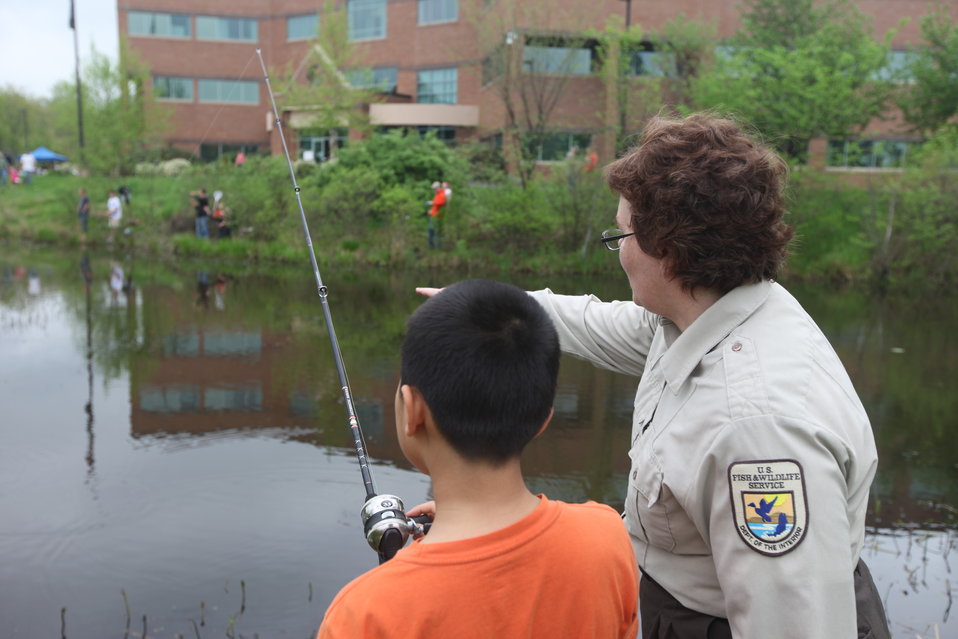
Fishing Derby